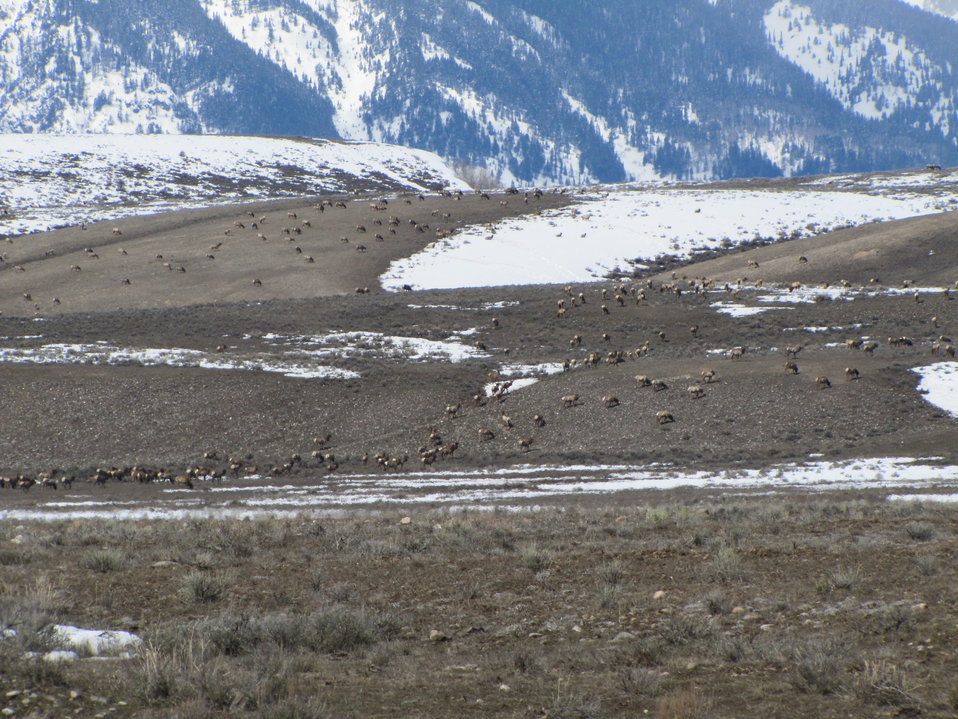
Beginning the Push North

Elk begin dispersing and moving north to higher elevations as spring-like conditions persist and green-up begins.